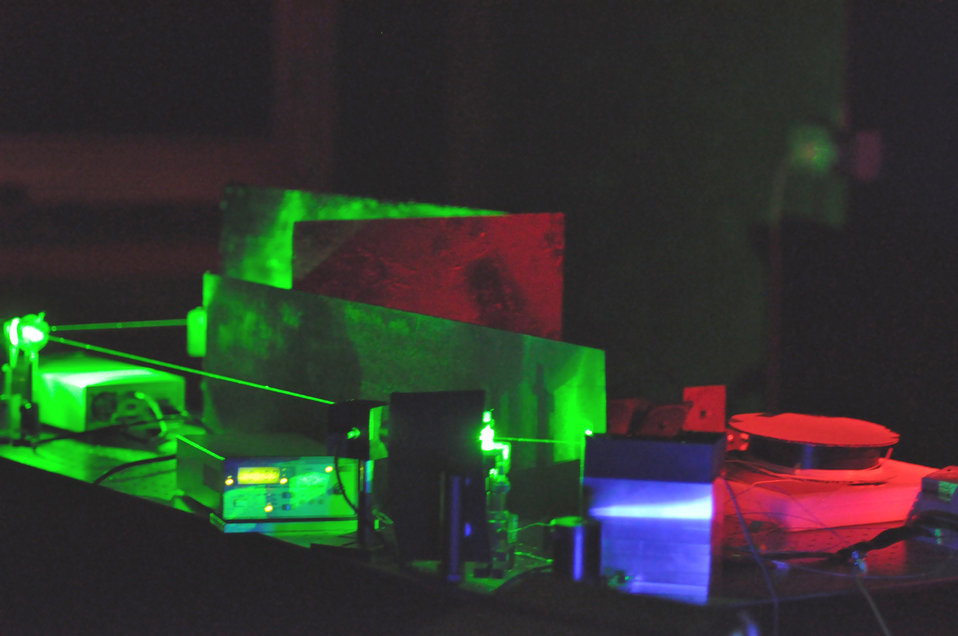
Photon Source

Gated photon source starts with the bright green 532nm wavelength laser beam that strikes a crystal (bright green spot, center) and is converted into pairs of photons at 810nm (false colored blue here, it's at the end of the red spectrum) and 1550nm (in the infrared, false colored red here.). The 'blue' beam is the herald channel, the 'red' beam goes through a spool of optical fiber (right) to delay it long enough for the ga6te to open or shut.